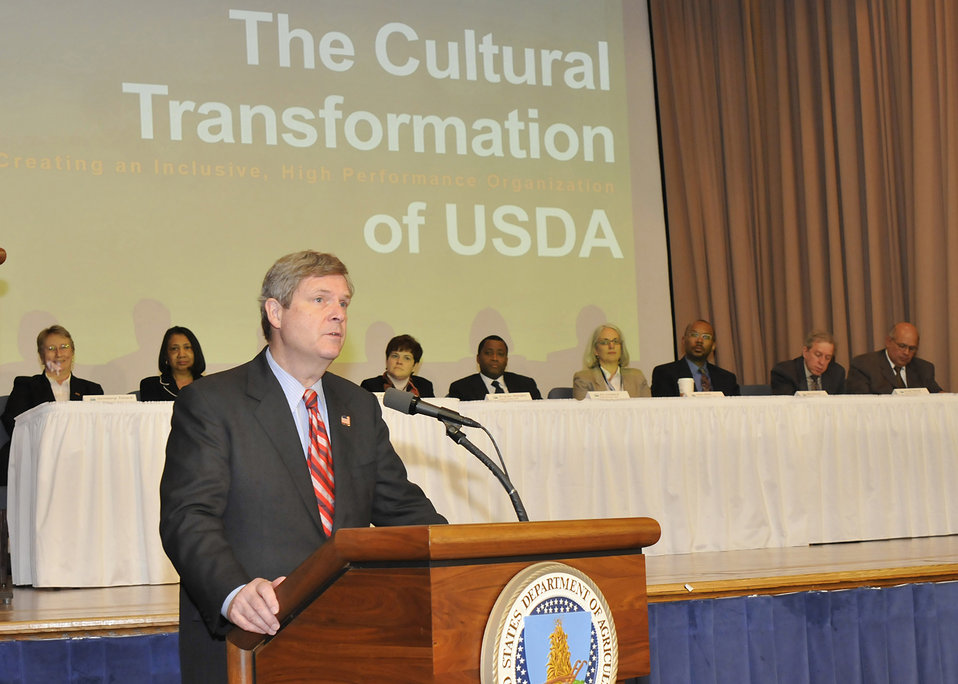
Agriculture Secretary Tom Vilsack launches the first of six Cultural Transformation Employee Listening Sessions held at the U.S. Department of Agriculture Jefferson Auditorium, in Washington, DC., on Wednesday, March 31, 2010. USDA is undergoing a process to transform the culture of the agency by creating a diverse, inclusive, and high-performance organization. (L to R in background Deputy Chief of Staff Carole Jett, Assistant Secretary for Departmental Management Alma Hobbs, Assistant Secretary for Congressional Relations Krysta Harden, Assistant Secretary for Civil Rights Dr. Joe Leonard, Acting Deputy Under Secretary of Research, Education, and Economics Molly Jahn, Acting Administrator Foreign Agricultural Service John Brewer, Deputy Under Secretary for Food Safety Jerold Mande, and Deputy Under Secretary for Rural Development Victor Vazquez).
USDA photo 10di1287-19.